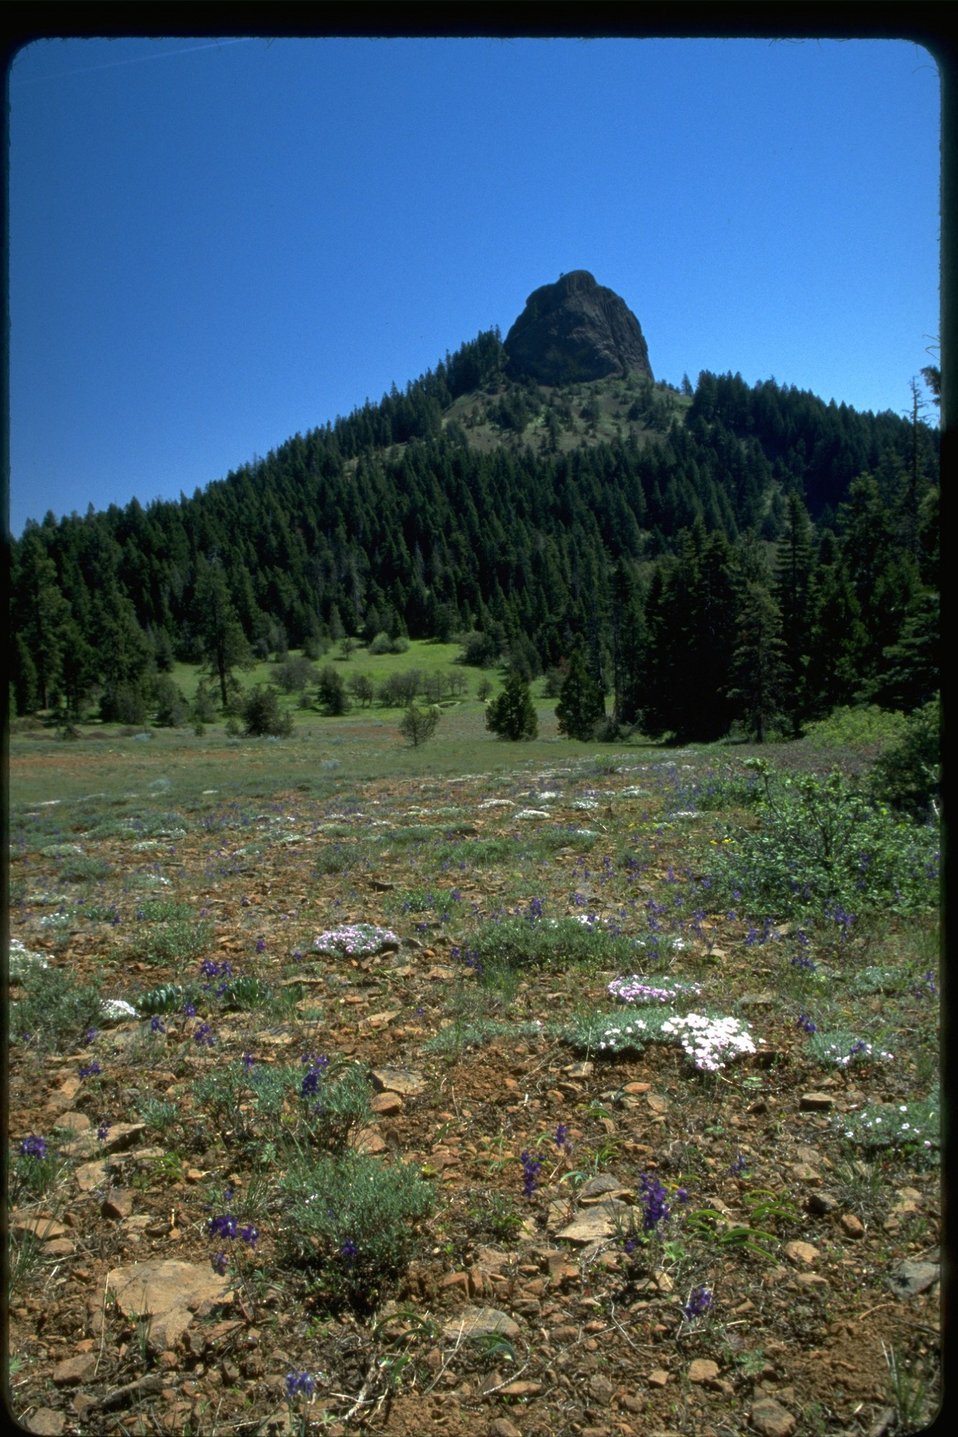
Long shot of Pilot Rock with Delphinium/Larkspur in foreground, Cascade-Siskiyou National Monument (CSNM).